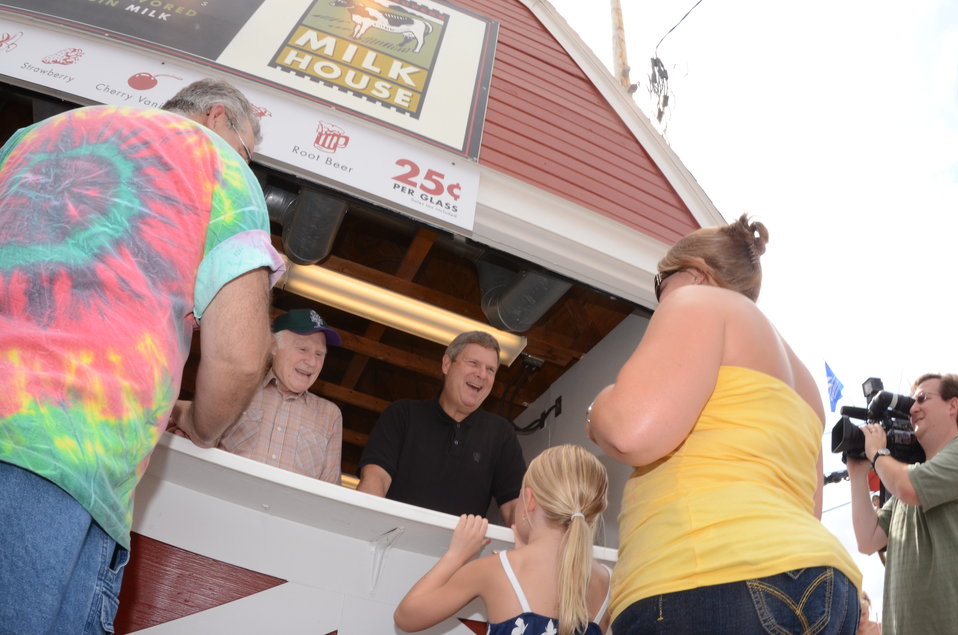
Wisconsin Senator Herb Kohl (left) and Agriculture Secretary Tom Vilsack aat the Wisconsin State Fair in West Allis, WI, on Thursday, August 4, 2011, USDA Photo by Lance Cheung.